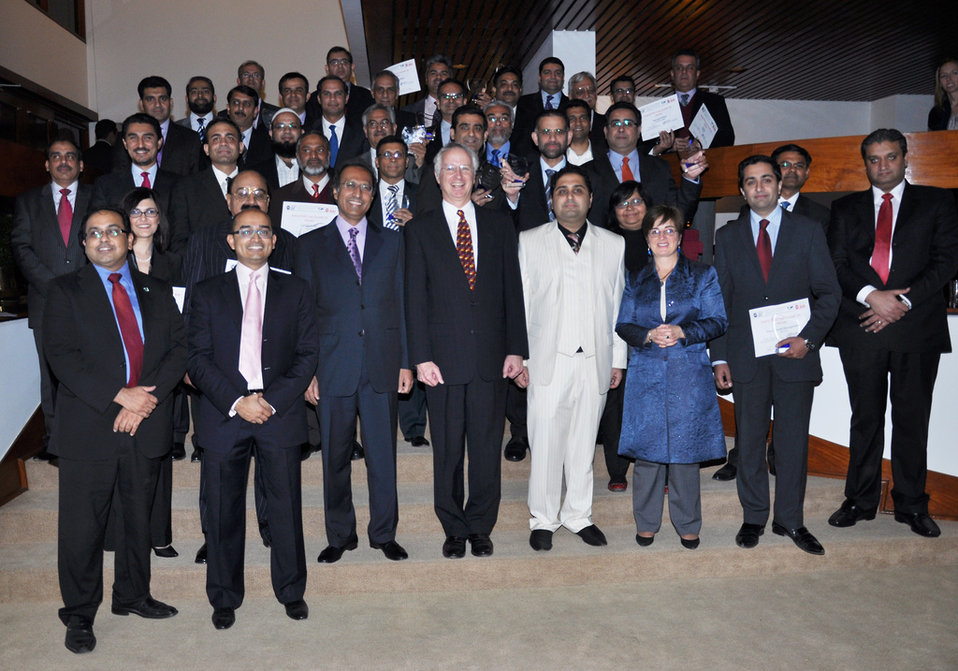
Pakistan Fast Growth 25 Contest

Islamabad, January 24, 2011 - U.S. Ambassador Cameron Munter hosted a reception at his residence for Minister of Finance Dr. Adbul Hafeez Shaikh, All World Network Co-founder Anne Habiby, and the winners of the Pakistan Fast Growth 25 Contest on January 24, 2011.